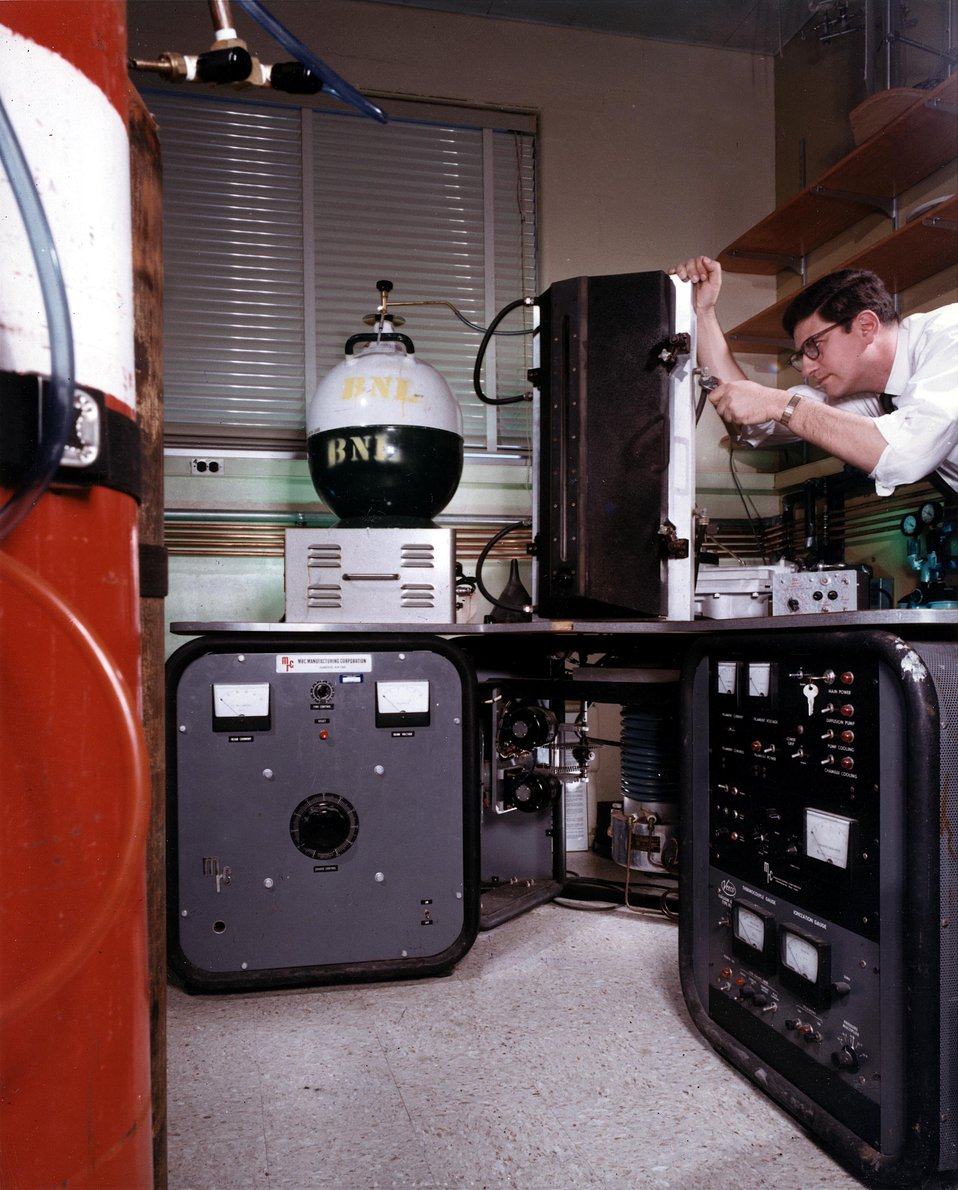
The electron beam zone refiner is used to produce high purity metals, as well as single crystals of many materials. c. 1967